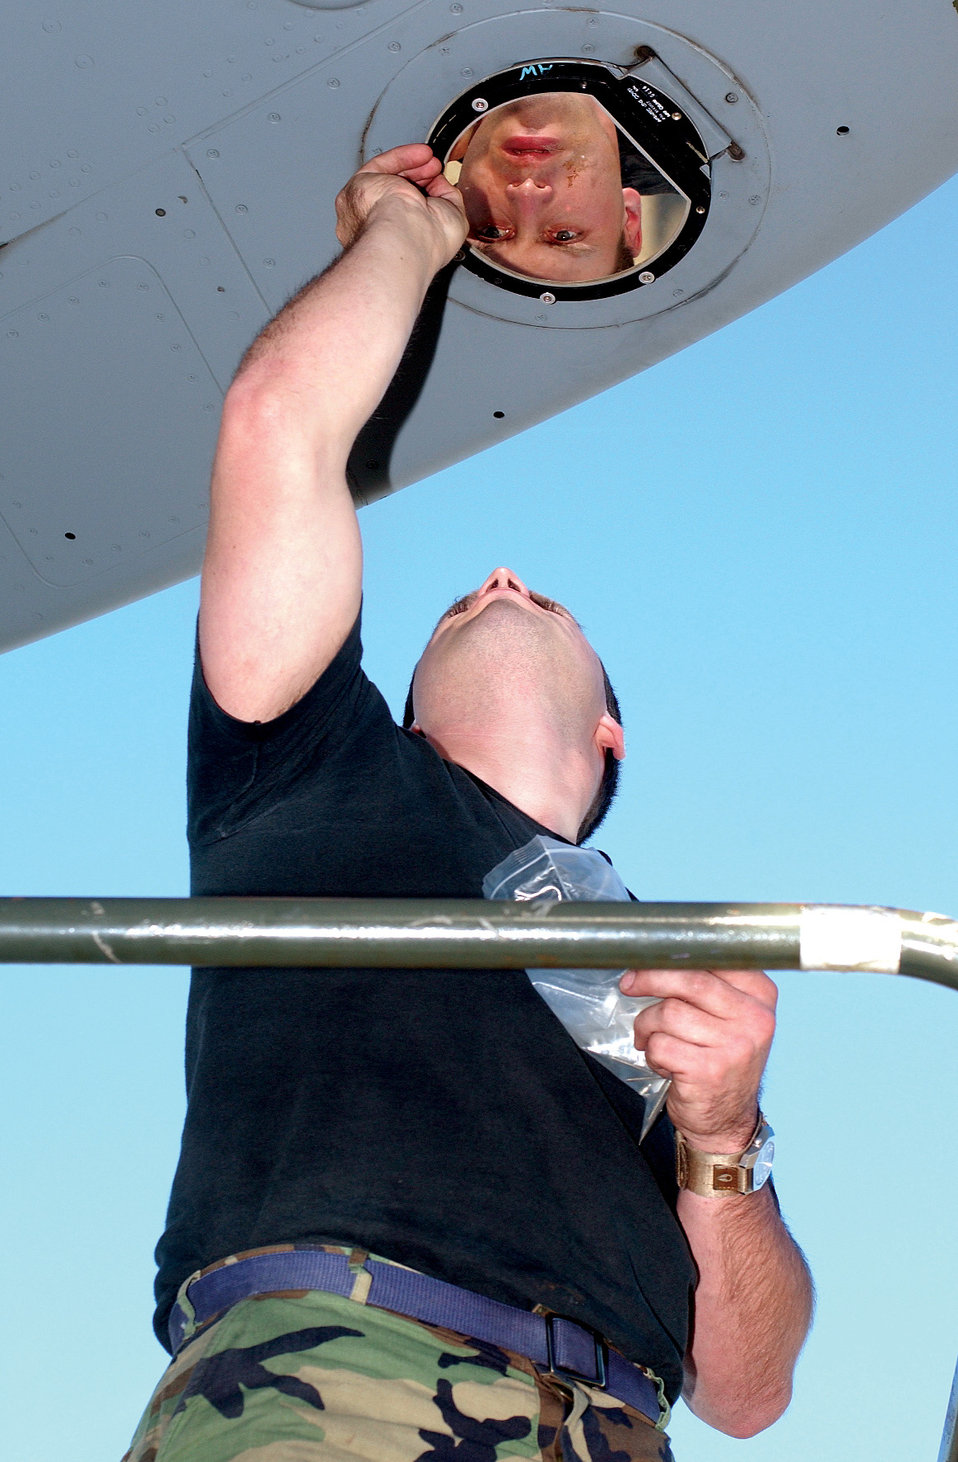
Infrared reflection

MCCHORD AIR FORCE BASE, Wash. -- Airman 1st Class Zachary Conat installs an infrared lens on the wing of a C-17 Globemaster III here recently. Airman Conat is assigned to the 62nd Aircraft Maintenance Squadron.